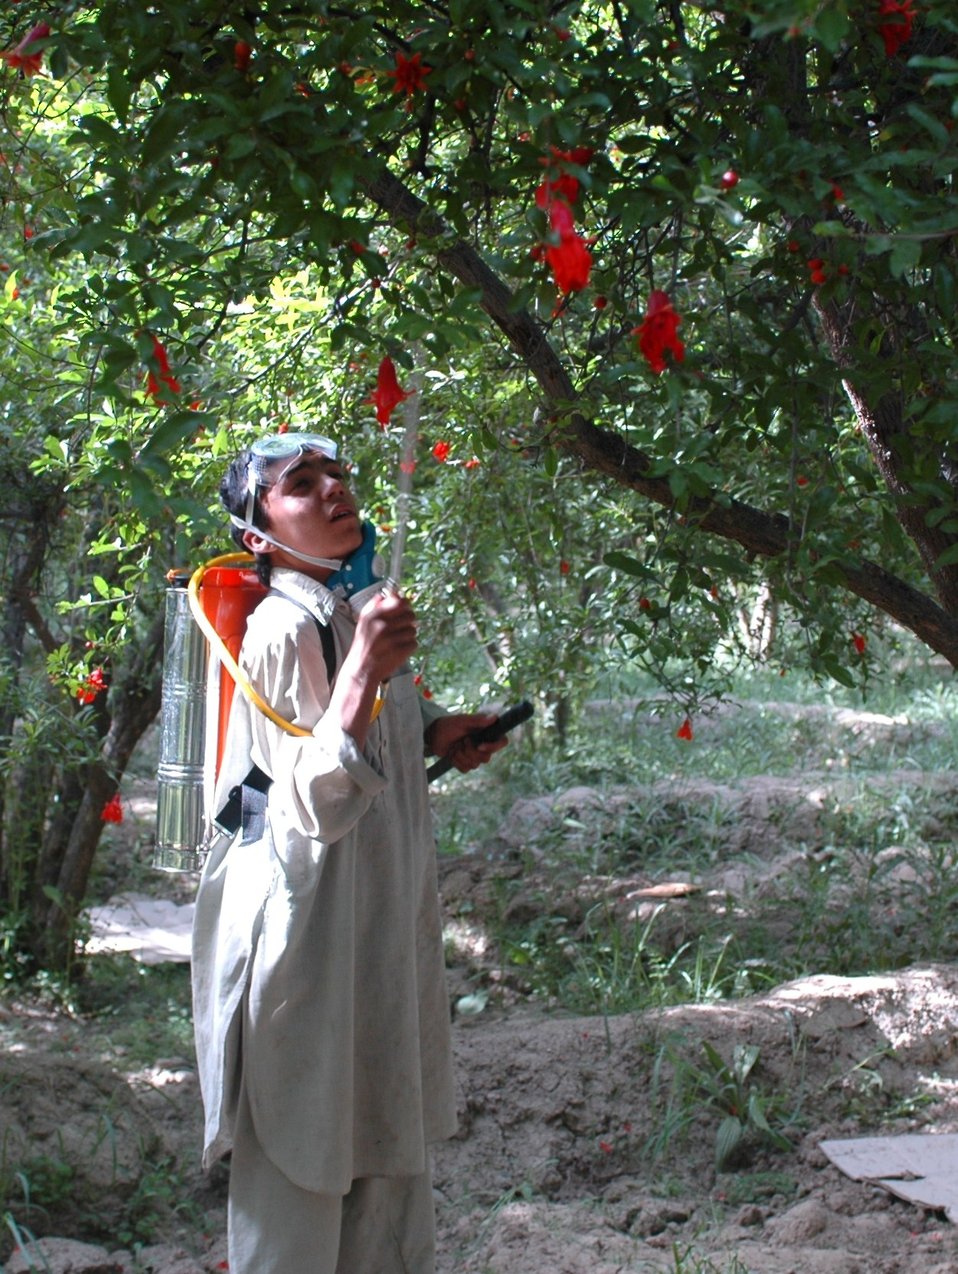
Dr Shah Visits Argandab April 10, 2010